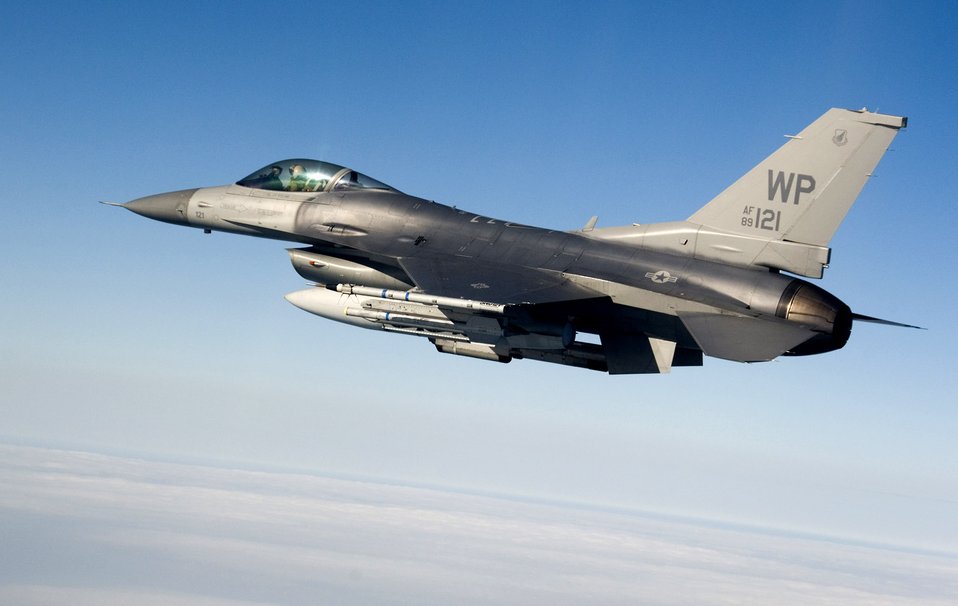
8th FW commander, ROKAF fly in training mission

Col. CQ Brown 8th Fighter Wing commander, leads a flight of F-16 Fighting Falcons during a joint Air Force and Republic of Korea Air Force training mission here Nov. 14. Pilots from the ROKAF's 111th Fighter Squadron joined with Kunsan pilots during the joint mission, giving pilots from both countries a chance to work together and hone their warfighting skills.